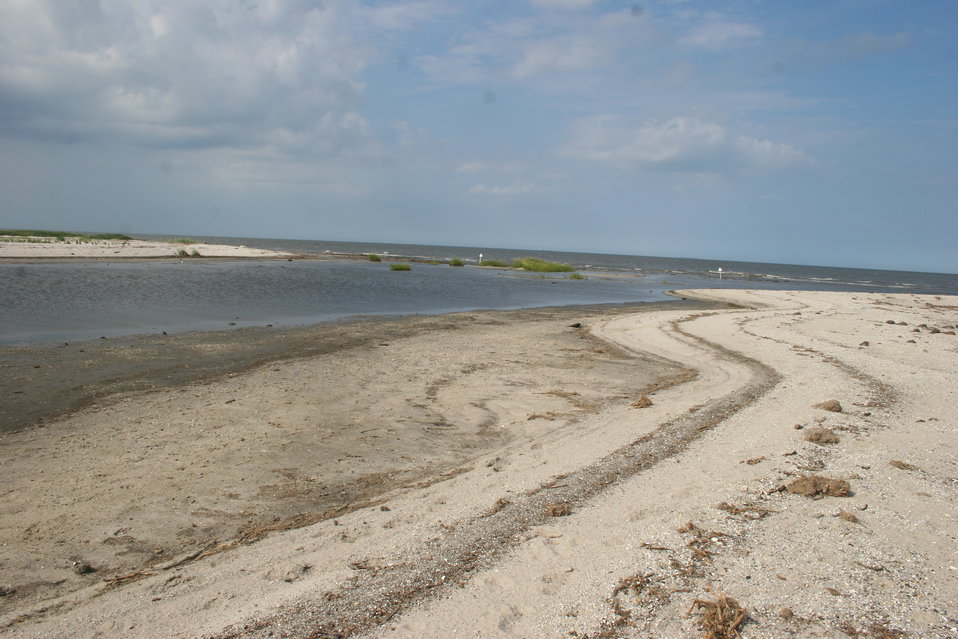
Beach at Prime Hook NWR